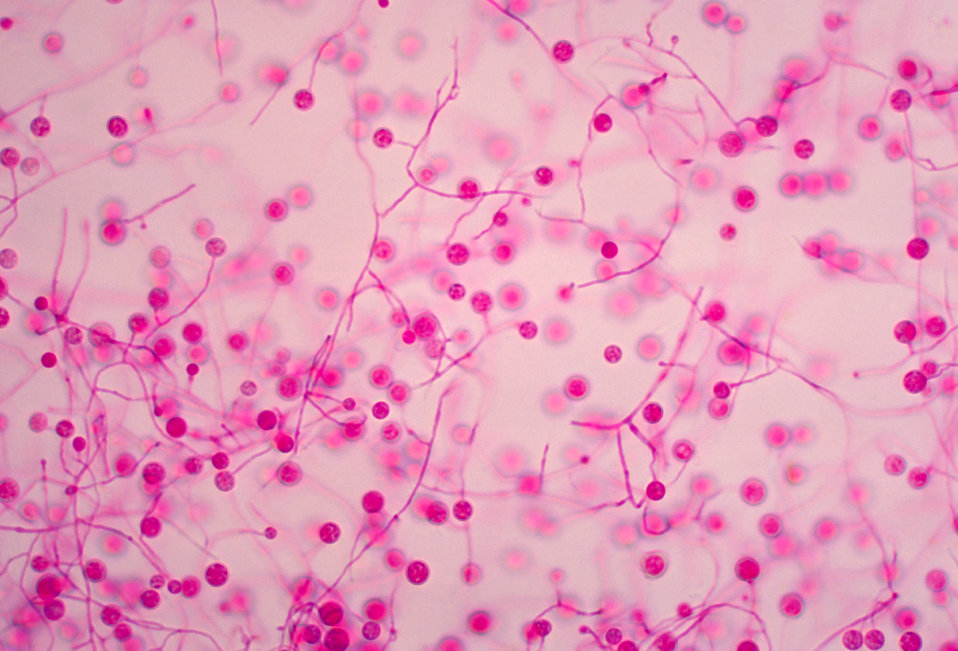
This photomicrograph shows the smooth macroconidia of the Jamaican isolate of Histoplasma capsulatum.